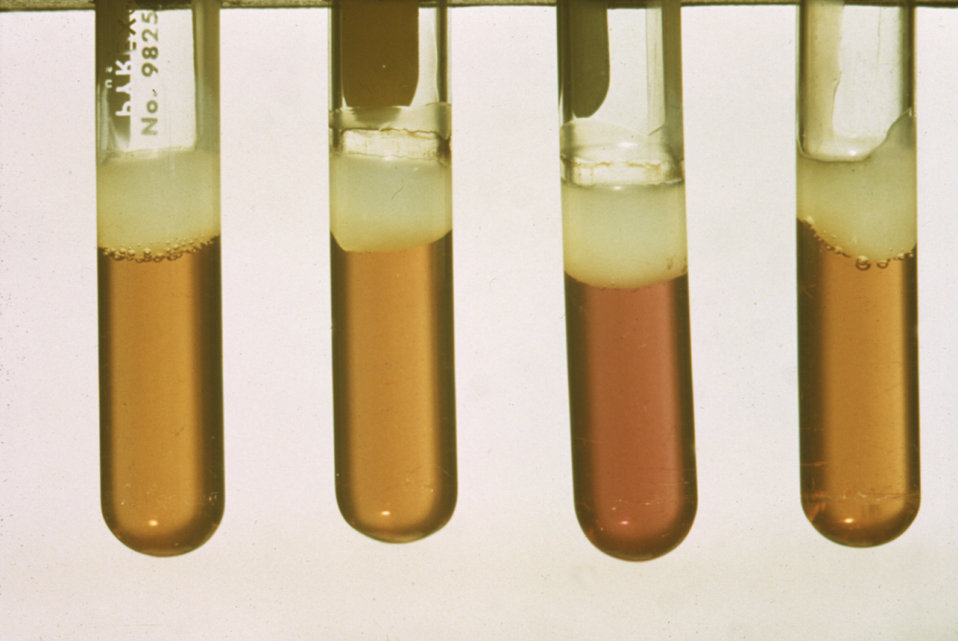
This culture test shows the results of a dicarboxylase reaction of an oxidative organism.